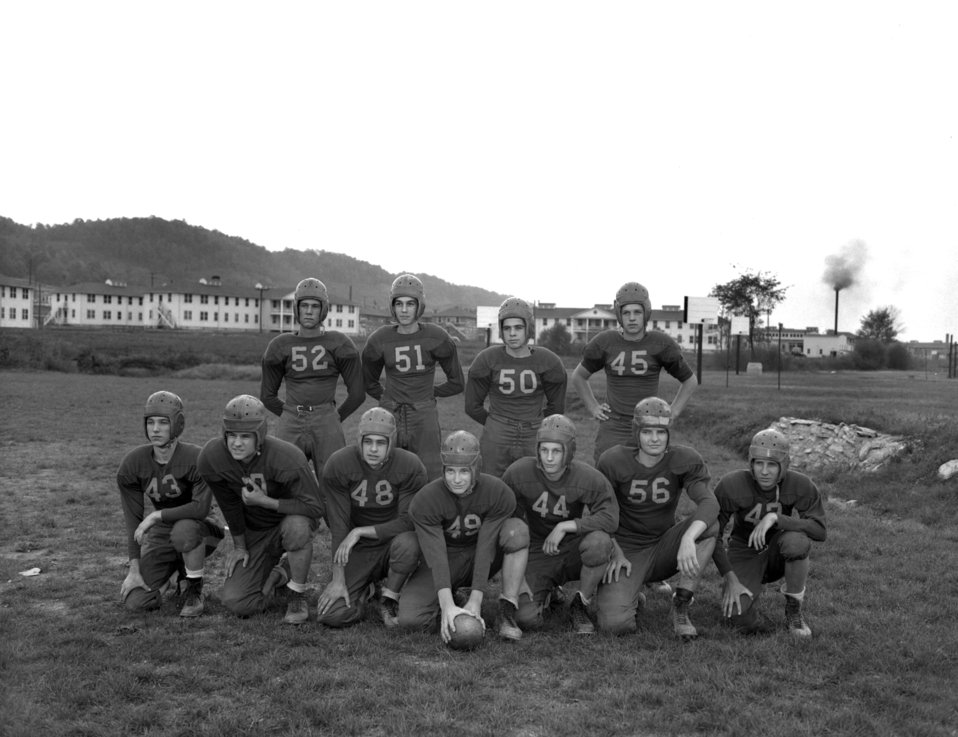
Jefferson Jr. High School Football Squad Oak Ridge

003857-5a

DOE photo by L. P. Stokes Jefferson High School Football Squad Coaches Chaney & Orlando Team left to right 1st roll J. Campbell, W. Black, D. Smith, D. Baccus, B. Parsons, B. Coffey, R. Watson
left to right 2nd roll M. Brazeale, R. Williams, L. Mitchell, T. McGrew
Oak Ridge Tennessee 10/31/1947